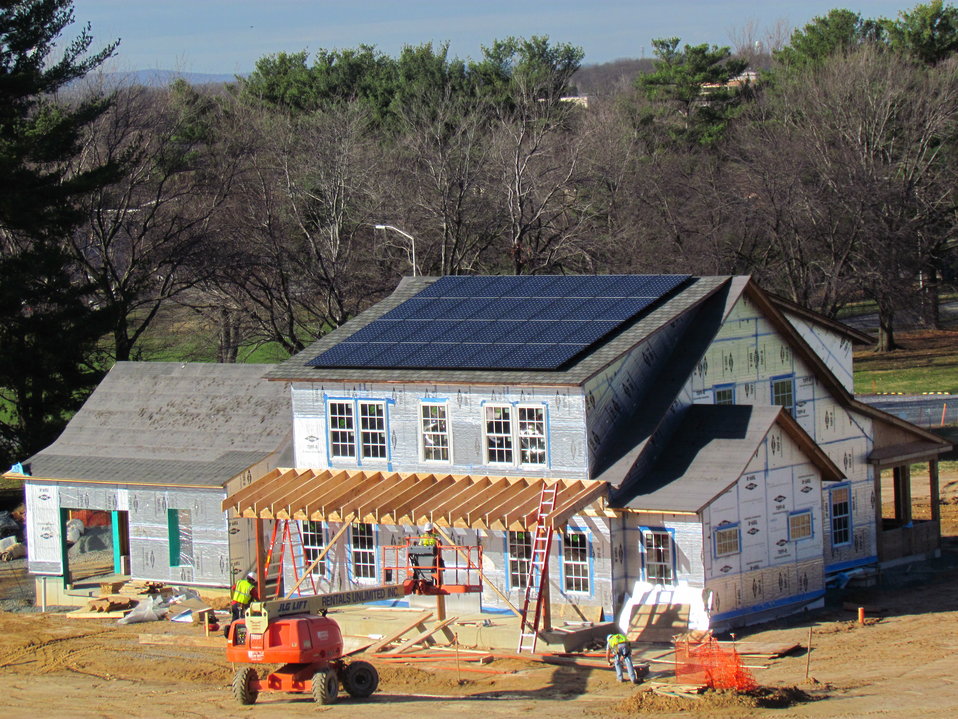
Net-Zero Energy Residential Test Facility – Photo showing completion of front porch framing with temporary column supports.